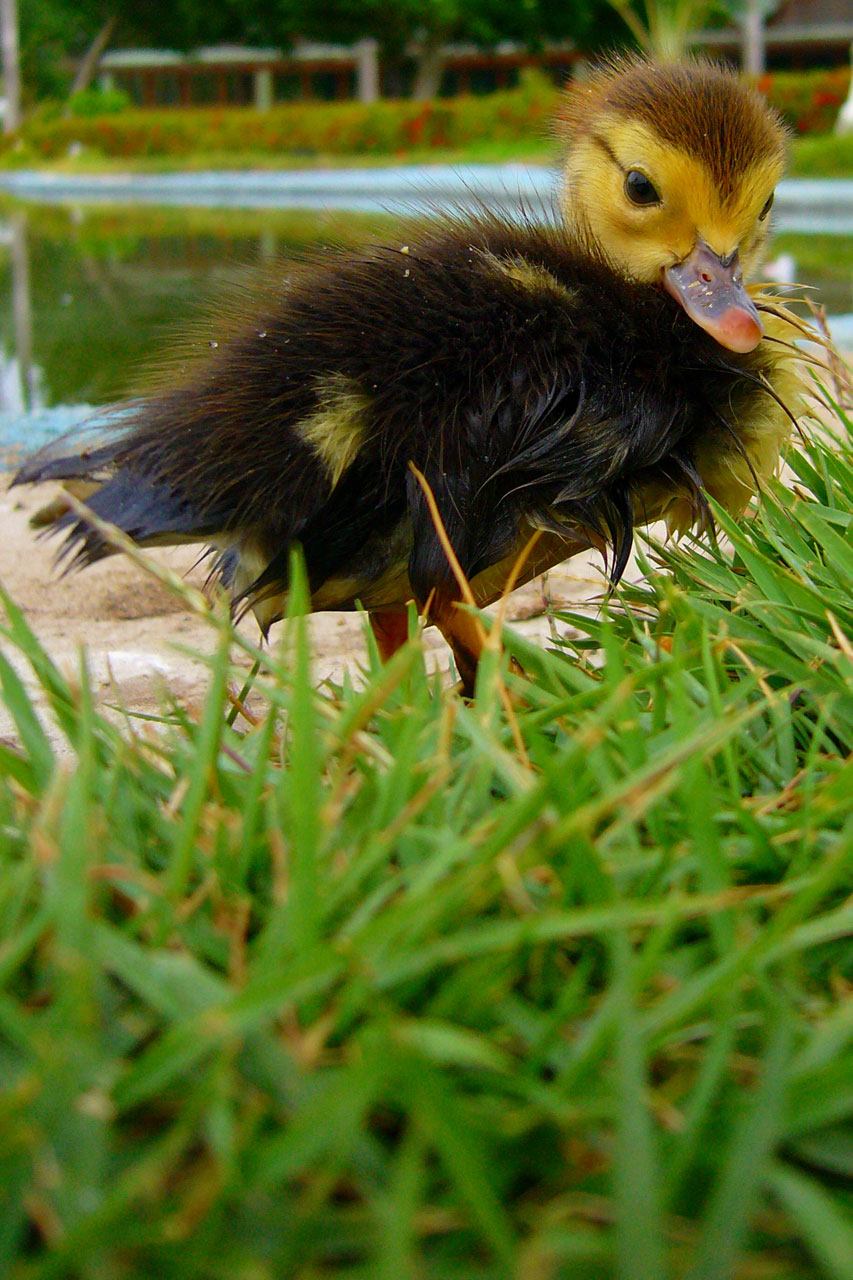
Duckling in grass.